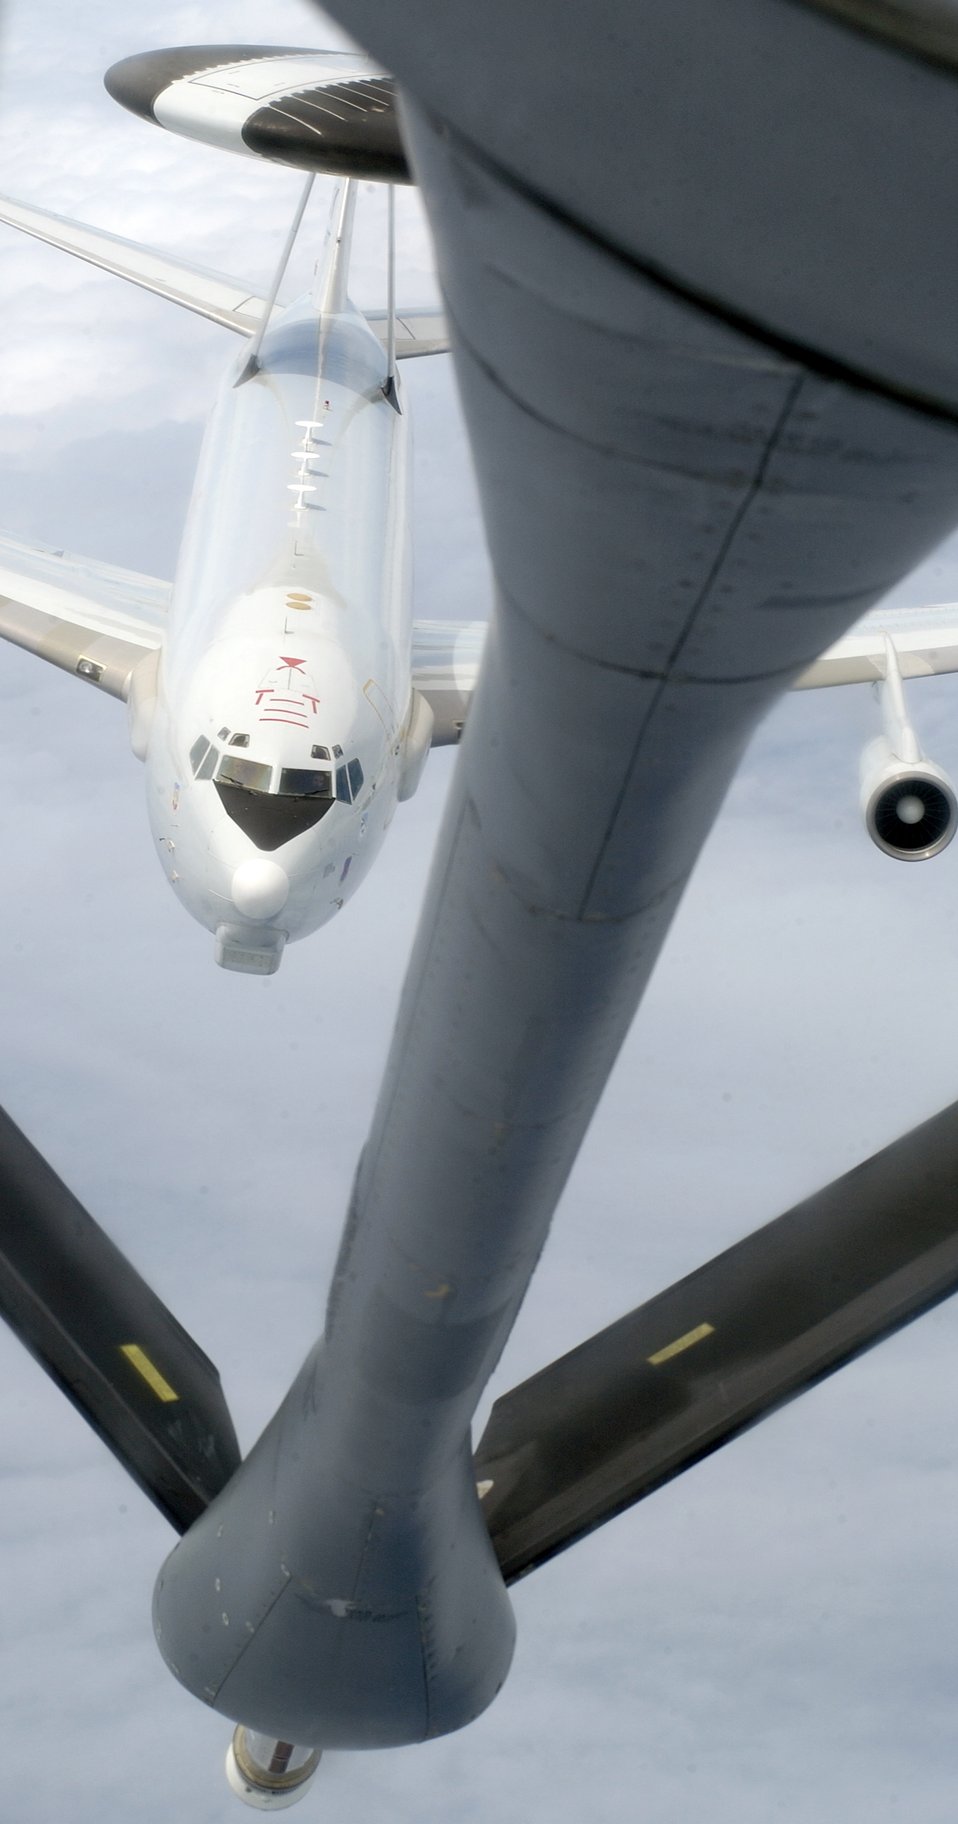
Sentry fill

OVER ECUADOR -- An E-3 Sentry airborne warning and control systems aircraft approaches a KC-135 Stratotanker for aerial refueling during a counterdrug operation mission based out of Manta, Ecuador. Counterdrug operations here have seized $1.4 billion in drugs since the start of the operation in 1999.